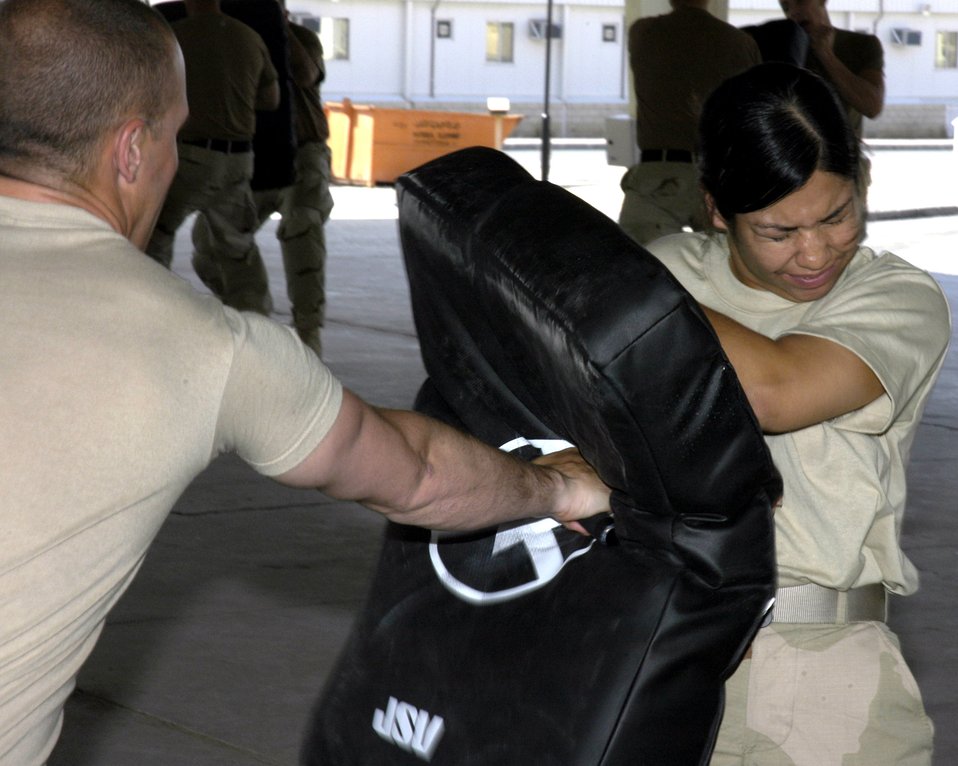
Defensive forces

Staff Sgt. Jennifer Corbin, a force protection member with the 386th Air Expeditionary Wing, takes part in a personal defense class March 30 in Southwest Asia. All 386th AEW force protection personnel are trained in the use of the ASP, an extending baton used by police and security forces.